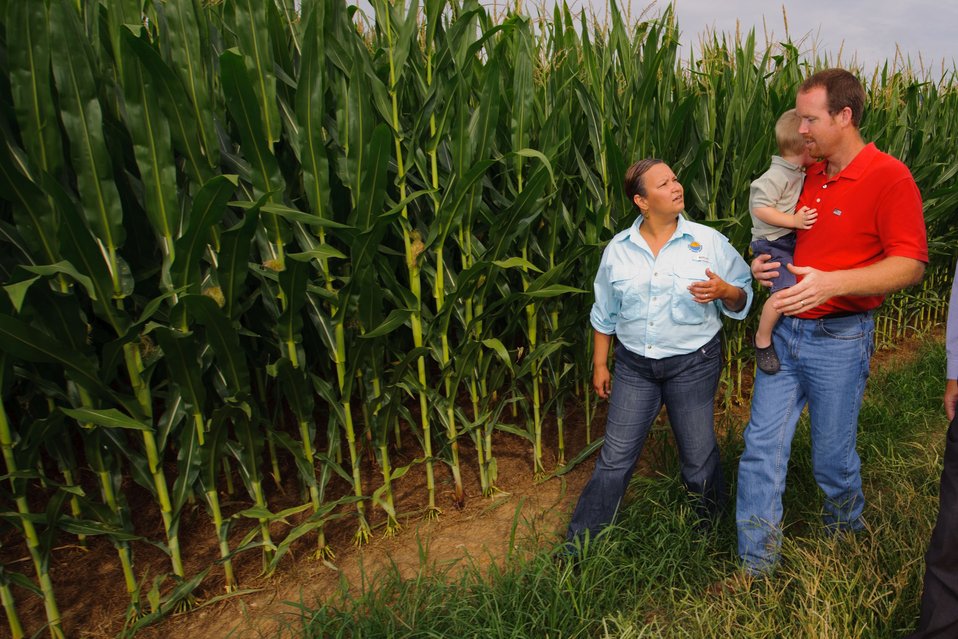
EPA Administrator tours Lititz, PA farm

Jeff Balmer shows Administrator Jackson his Lititz, PA farm